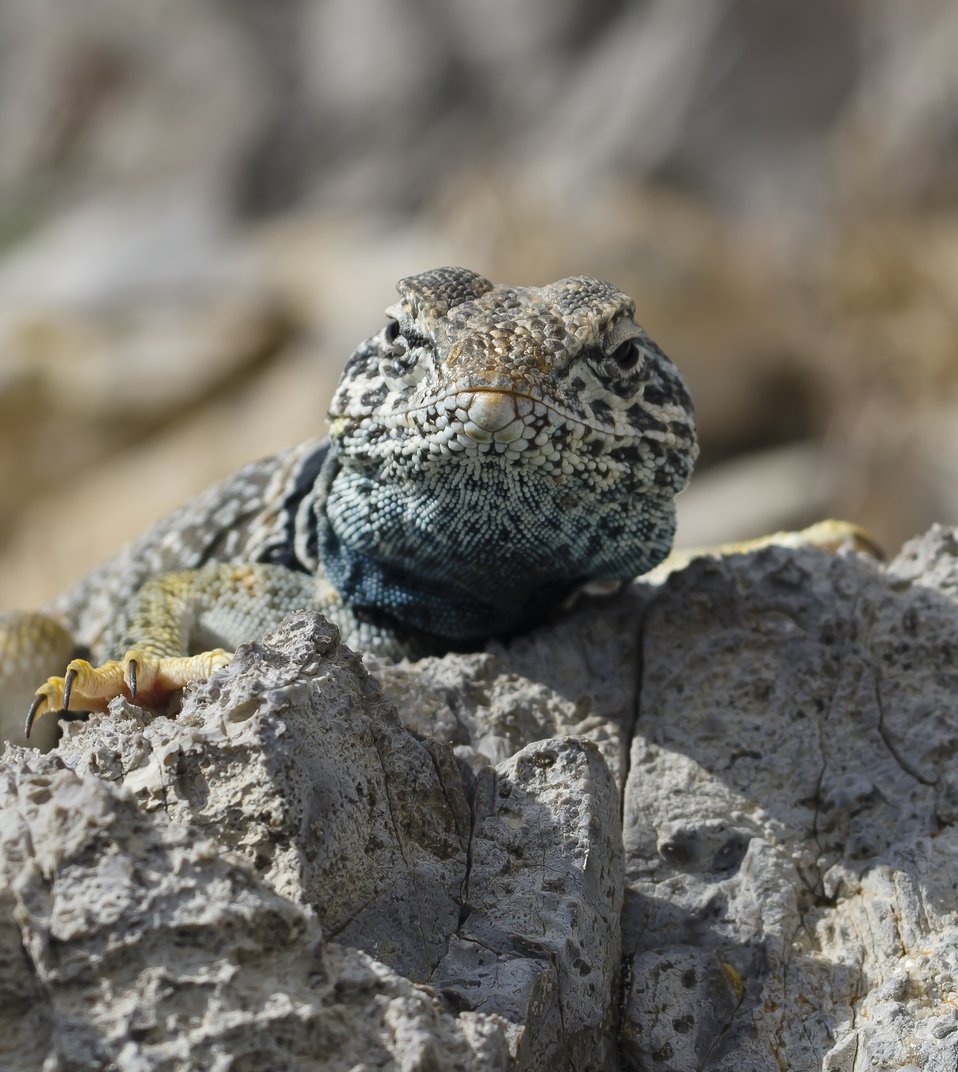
Great Basin Collared Lizard

The Great Basin collared lizard (Crotaphytus Bicinctores) is found throughout much of the western U.S. The species occurs in the western half of Utah in the Great Basin in dry, rocky areas with little vegetation

Credit: Larry Crist / USFWS

Photo Contest Entry #143